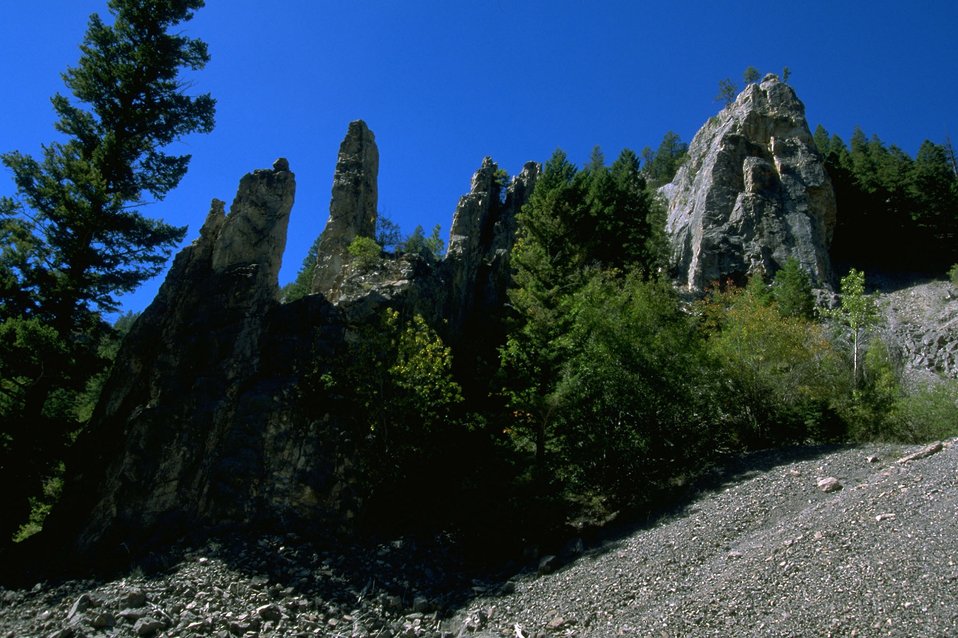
Rattler Gulch-Limestone Cliffs ACEC